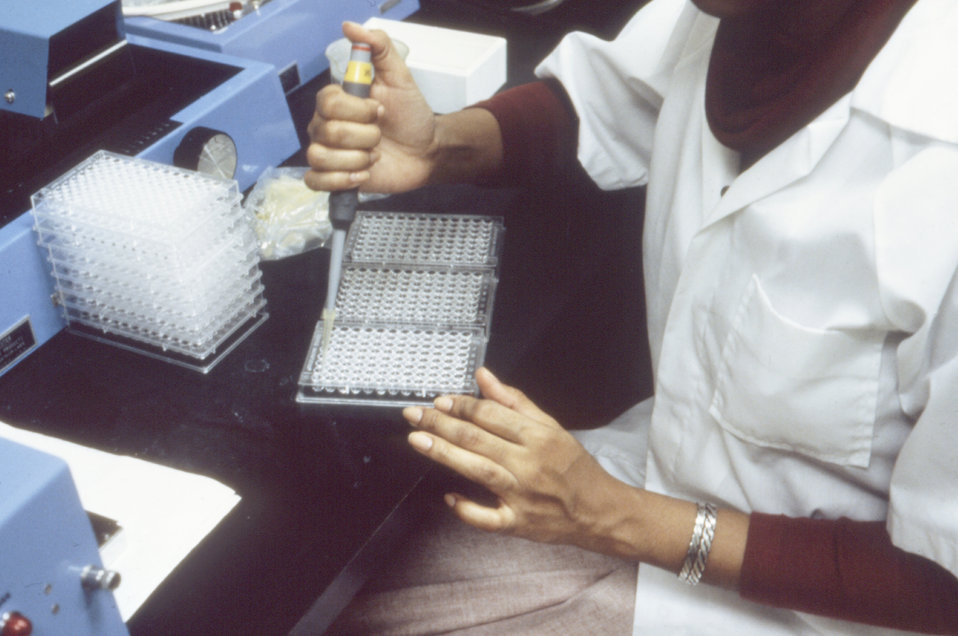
This lab tech is dispensing sera into microtiter plates to test for the presence of L. pneumophilia antibodies.